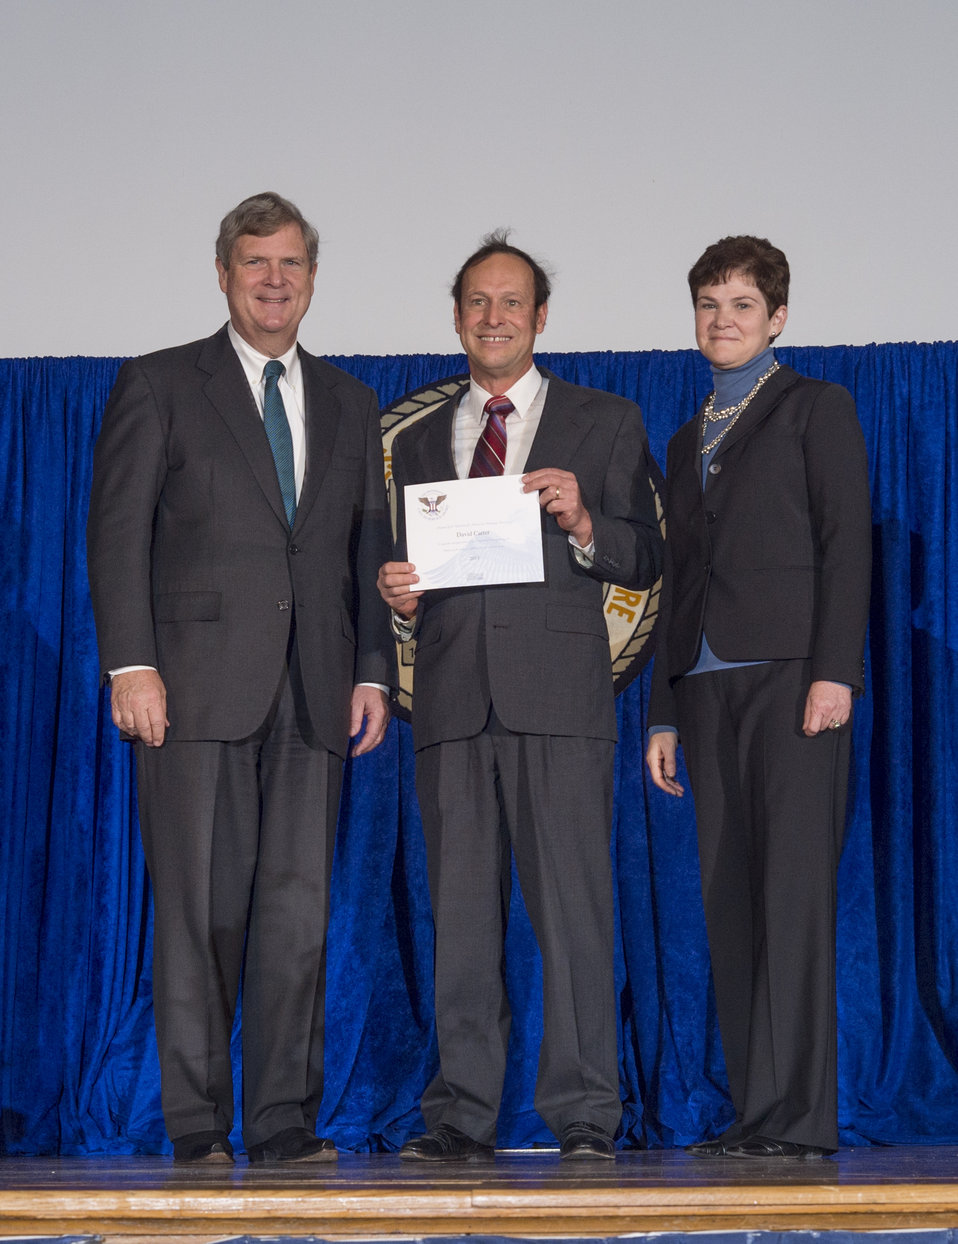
Agriculture Secretary Tom Vilsack and Agriculture Deputy Secretary Krysta Harden present the President’s Call to Service Award to David Carter at the 2013 Secretary's Honor Awards in the Jefferson Auditorium at the U.S. Department of Agriculture (USDA) in Washington, D.C. on Wednesday, Dec. 11, 2013. The President’s Call to Service Award is given to an employee who has served 4,000 hours or more of service with a qualifying organization over the employee’s lifetime.